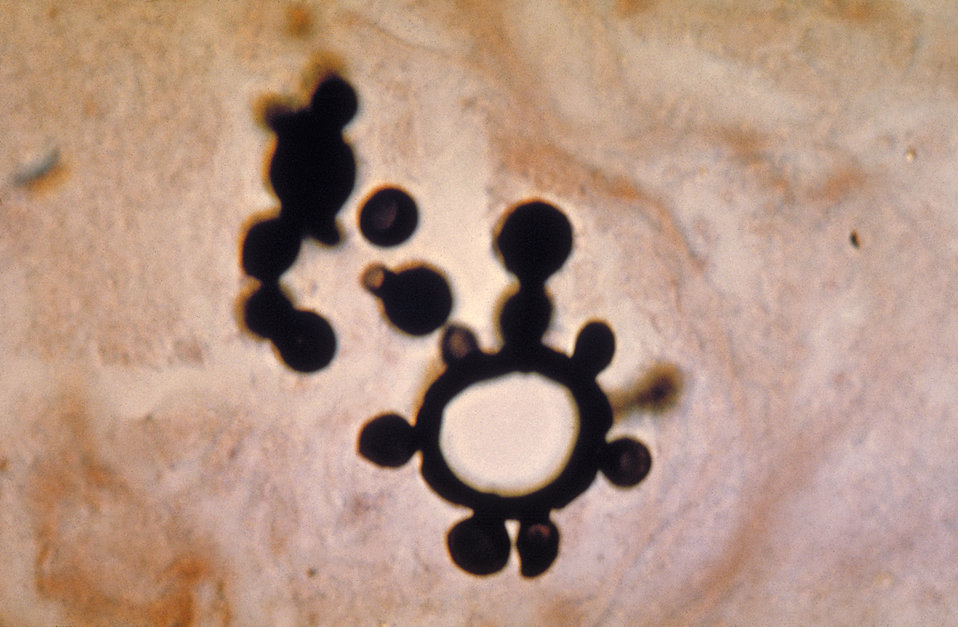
Histopathology of paracoccidioidomycosis. Methenamine silver stain.